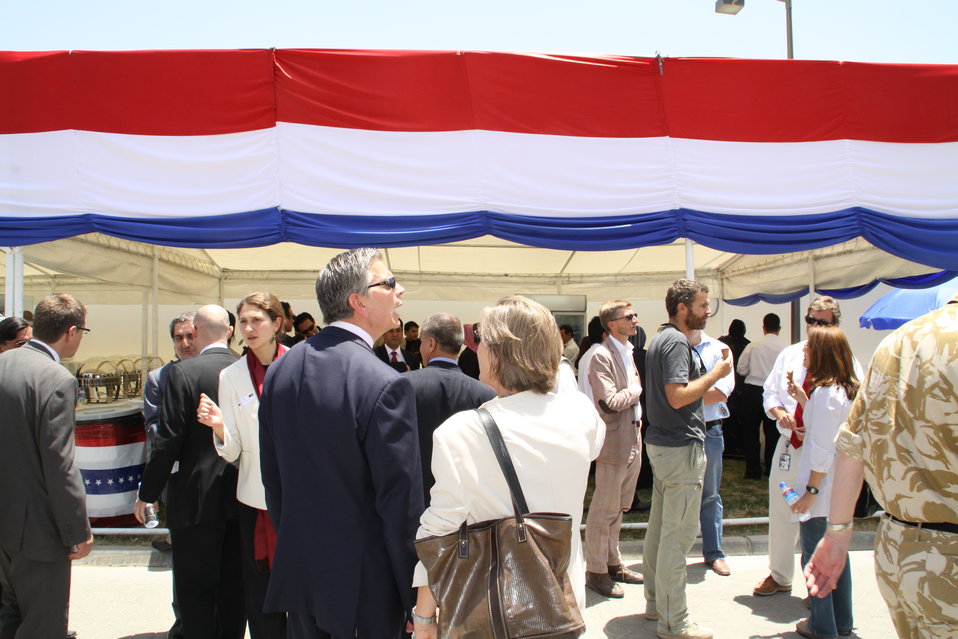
Kabul Official July 4th Celebration